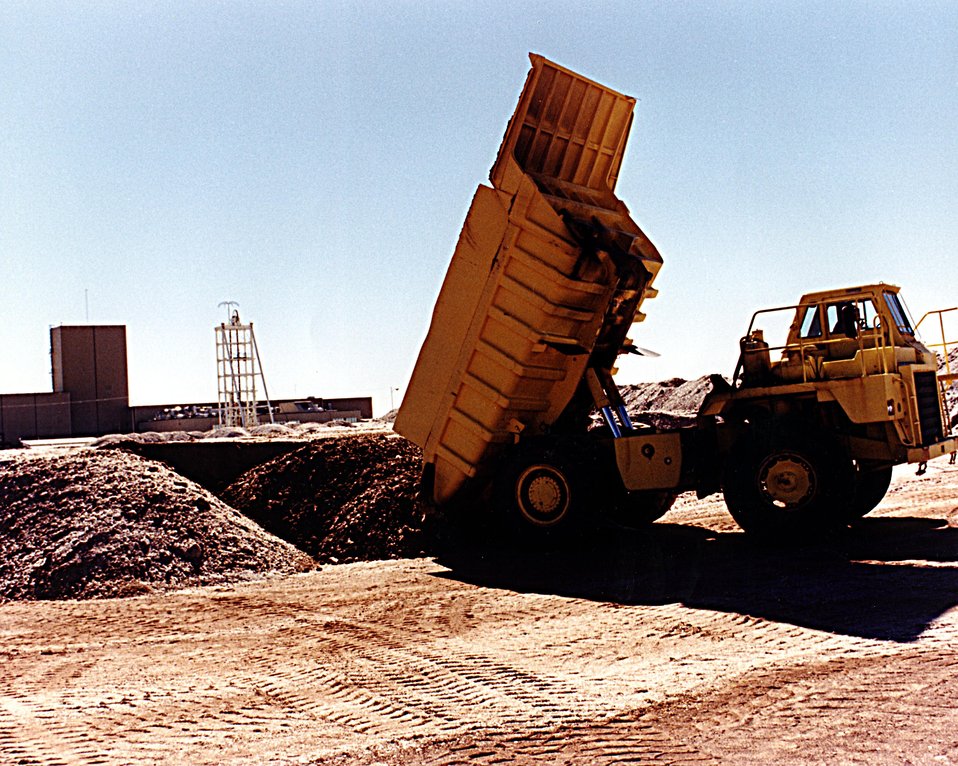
TRUCK AT SALT PILE.

THE WASTE ISOLATION PILOT PLANT IS A DOE RESEARCH AND DEVELOPMENT FACILITY FOR DEMONSTRATING THE SAFE DISPOSAL OF TRANSURANIC RADIOACTIVE WASTE. FOUR VERTICAL SHAFTS CONNECT THE SURFACE FACILITIES TO THE UNDERGROUND. THE SHAFTS, ONE 21 FEET IN DIAMETER AND THE OTHERS 14 FEET IN DIAMETER, PROVIDE A MEANS OF TRANSPORTING THE WASTE, WORKERS, EQUIPMENT, MINED SALT, AND FRESH AIR FROM THE SURFACE TO THE UNDERGROUND SALT ROCK FORMATION THAT IS BEING TESTED TO DETERMINE SUITABILITY FOR RADIOACTIVE WASTE STORAGE. RADIOACTIVE BIN-SCALE TESTS ARE SCHEDULED TO BEGIN BEFORE THE END OF 1991.